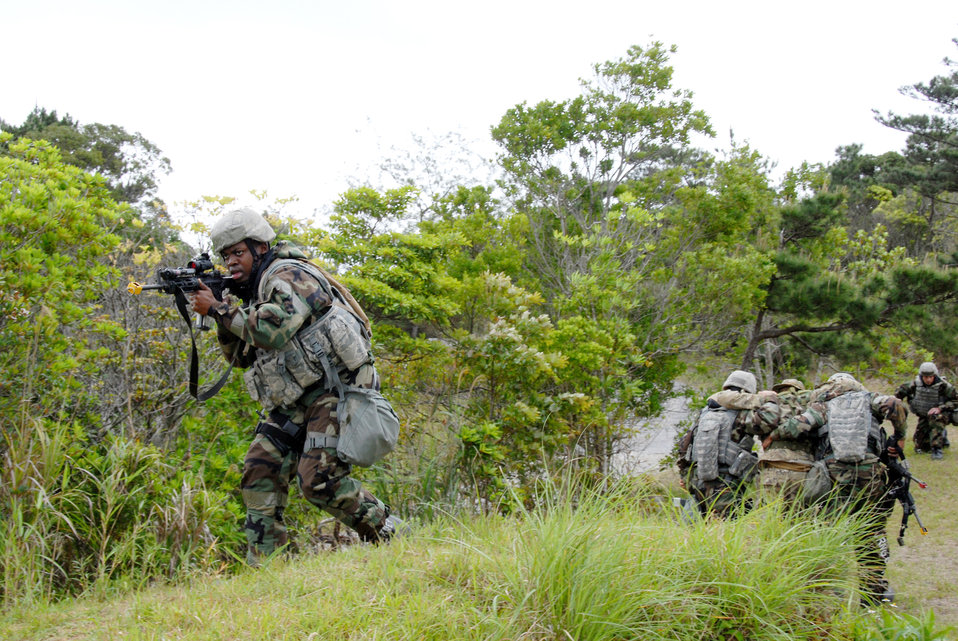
Kadena Airmen test readines during exercise

Airmen from the 18th Wing Security Forces Squadron come under simulated fire while on a combat patrol during a base exercise March 25, 2010, at Kadena Air Base, Japan. The 18th Wing participated in a local operational readiness exercise to test base Airmen's ability to defend Japan and maintain peace and stability in the Pacific region.